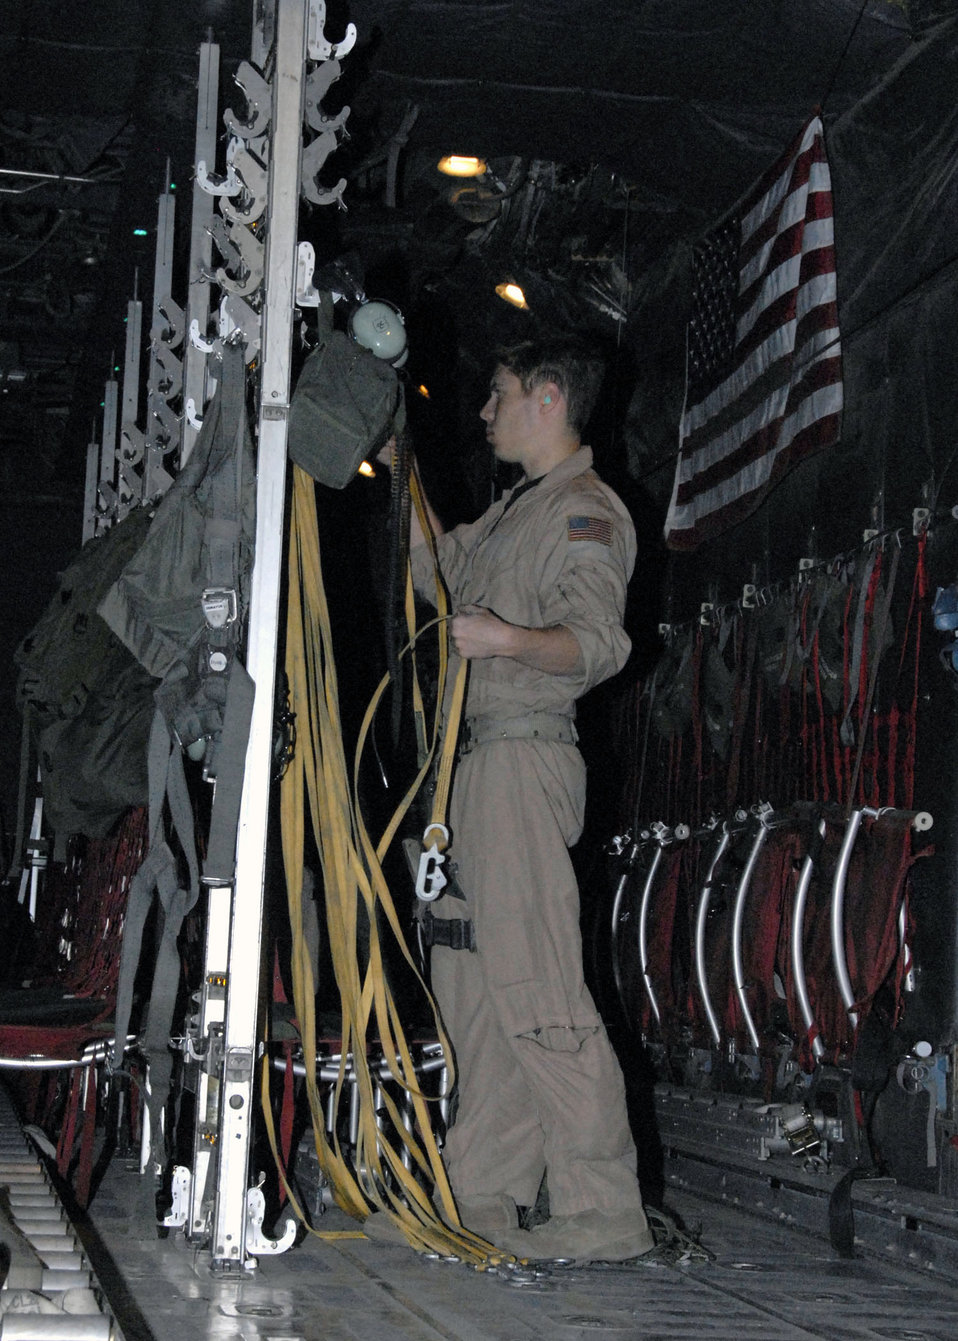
Airmen airdrop messages to Iraqi citizens

Staff Sgt. Gabriel Molanders puts away the static lines used in airdropping several hundred thousand leaflets from a C-130 Hercules over an Iraqi city recently. Sergeant Molanders is a C-130 loadmaster assigned to the 737th Expeditionary Airlift Squadron and deployed from Dyess Air Force Base, Texas.